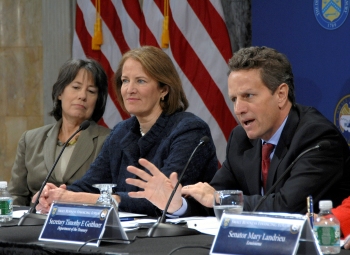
Treasury and SBA Host a Small Business Financing Forum

On November 18, 2009, Secretary Geithner and Small Business Administrator Karen G. Mills convened a forum on small business financing issues for a range of key stakeholders including FDIC Chairman Sheila Bair.